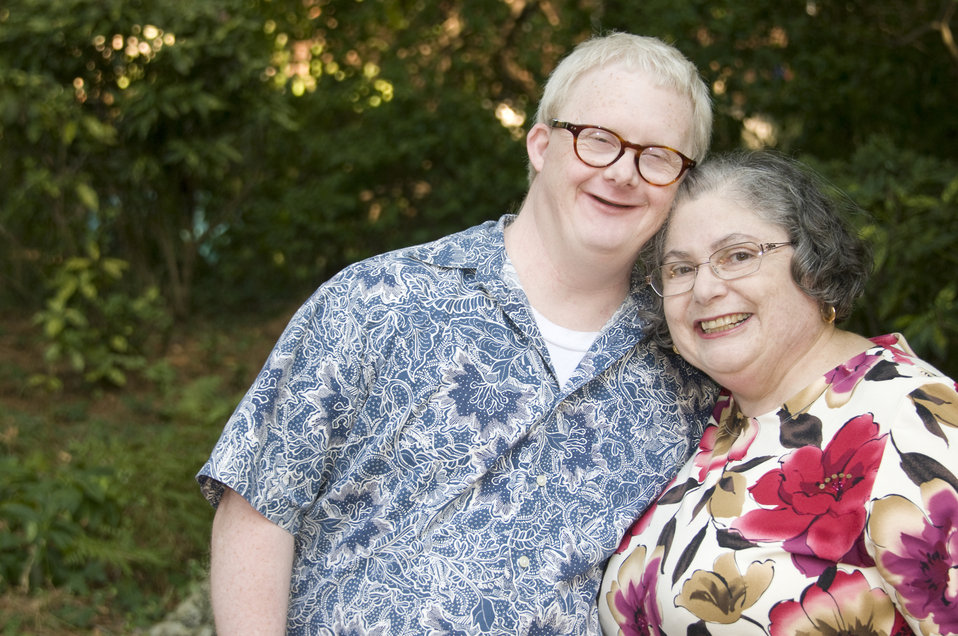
The mother and son depicted in this image both lead challenging lives. However, their loving, supportive relationship, provides strength to them both, together enabling them to overcome obstacles, which might have been too much for either one alone. The son lives with an intellectual disability, and each day the mother confronts a debilitating arthritic condition, but neither one allows these conditions to impede their daily lives.